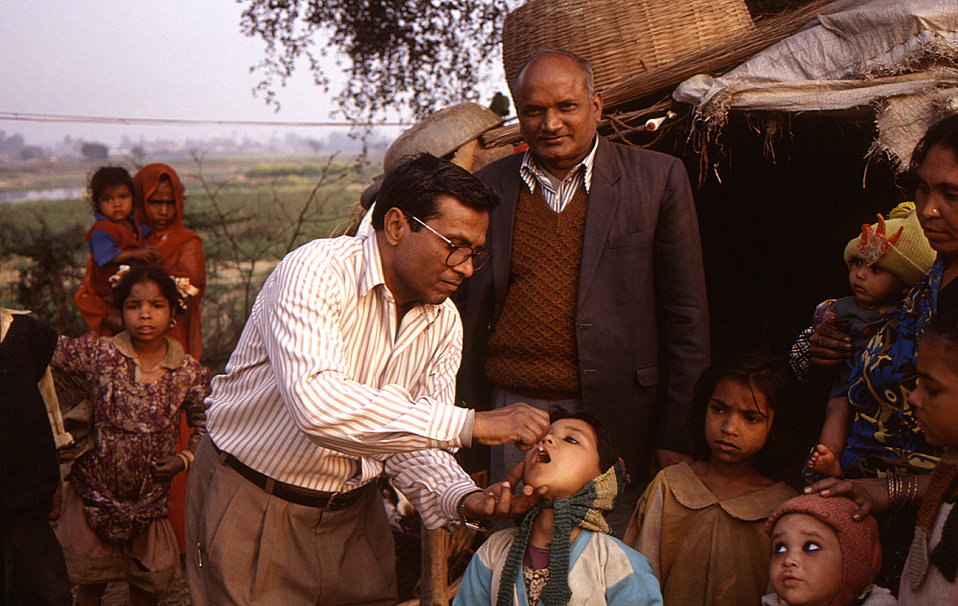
This 2000 photograph depicted the District Immunization Officer of Gorakhpur, India as he was administering polio vaccine to a group of children during a National Immunization Day (NID). Living in a rural area made access to clinical services an unlikely possibility for these children to receive the polio vaccine. Thousands of children throughout the country receive a polio vaccine on each NID. Since its inception in the fall of 1998, the STOP Transmission of Polio (STOP) immunization initiative teams have worked in over 50 countries. In the first years of the program, most STOP team members worked primarily to bolster acute flaccid paralysis (AFP) surveillance, support 'national immunization' days, and conduct polio case investigation and follow-up.